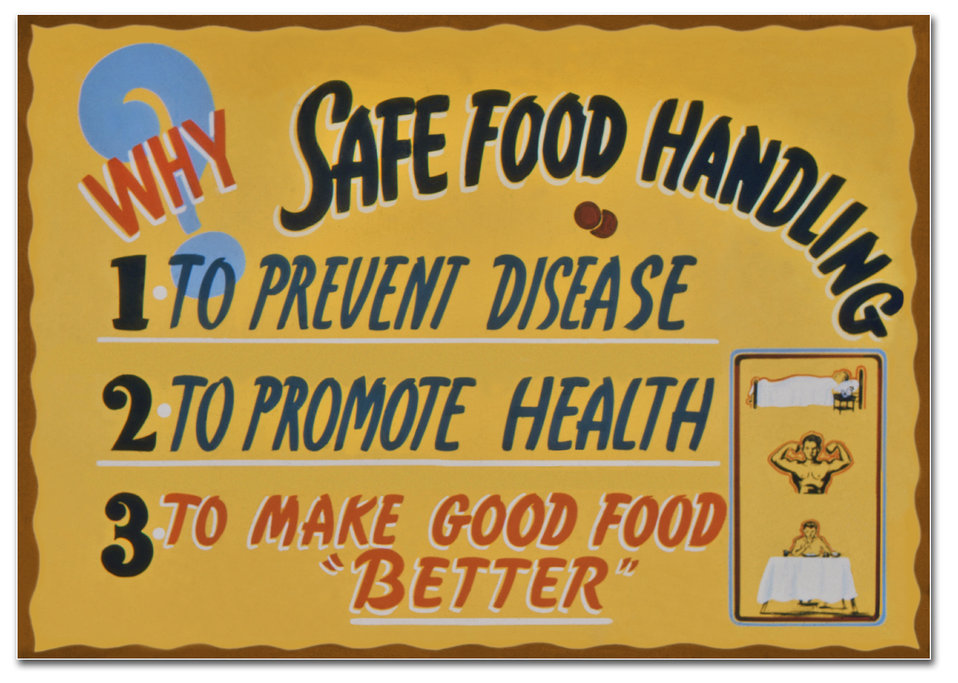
Created during the 1930s, this historic sign, explaining the benefits of safe food handling, was created by the Minnesota Department of Health. Its message was part of a campaign to promote food safety and to prevent food-borne illness.